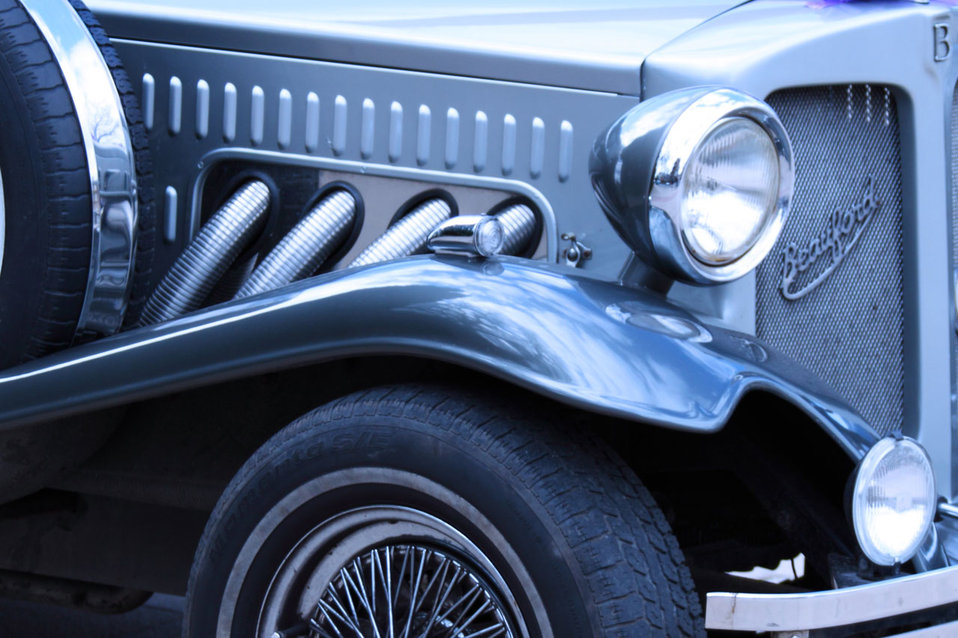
Vintage car

Classic car in blue.